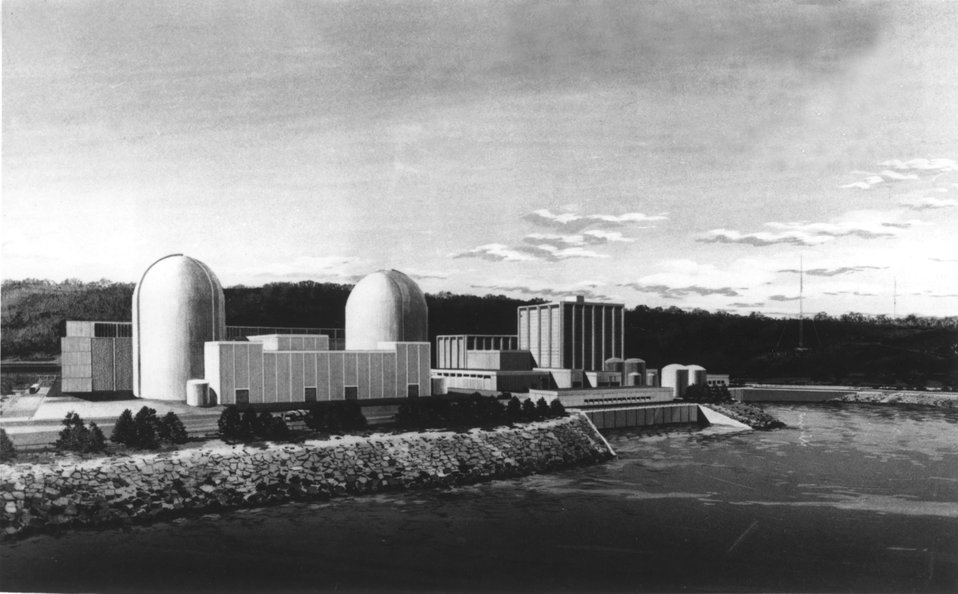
Architecht's rendering shows proposed Pilgrim Nuclear Generating Units 2 and 3 to be built adjacent to the present Reston Edison Company's 664,000 kilowatt nuclear generating station (right) in Plymouth, Mass. Circa 1974.